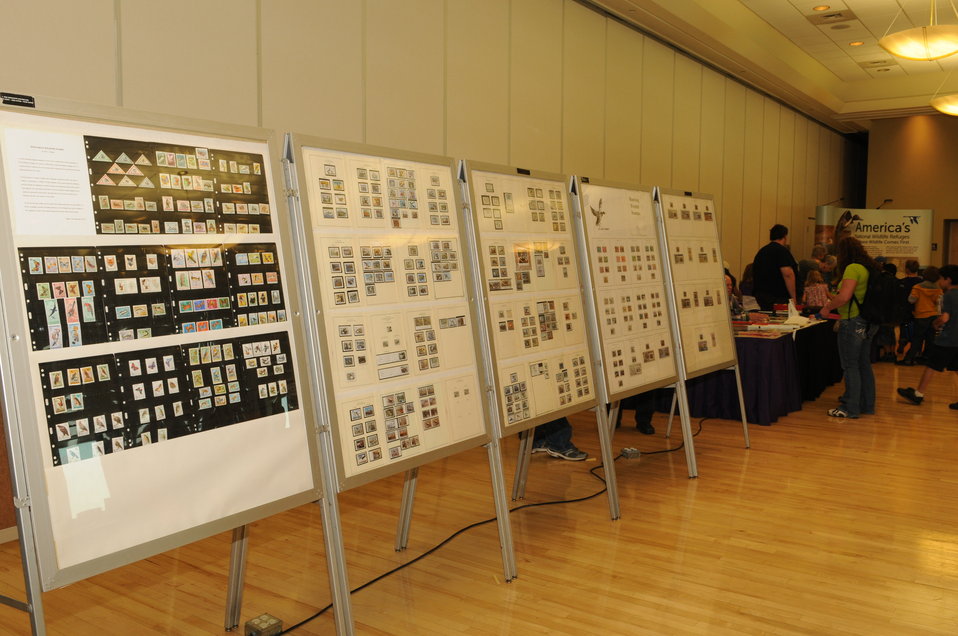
Displays

The U.S. Fish & Wildlife Service sponsored the 2012 Federal Duck Stamp Art Contest September 28 and 29 in Ogden, Utah, at Weber State University. A panel of five judges was responsible for choosing the art work used to design the 2013-2014 Migratory Bird Hunting and Conservation Stamp.